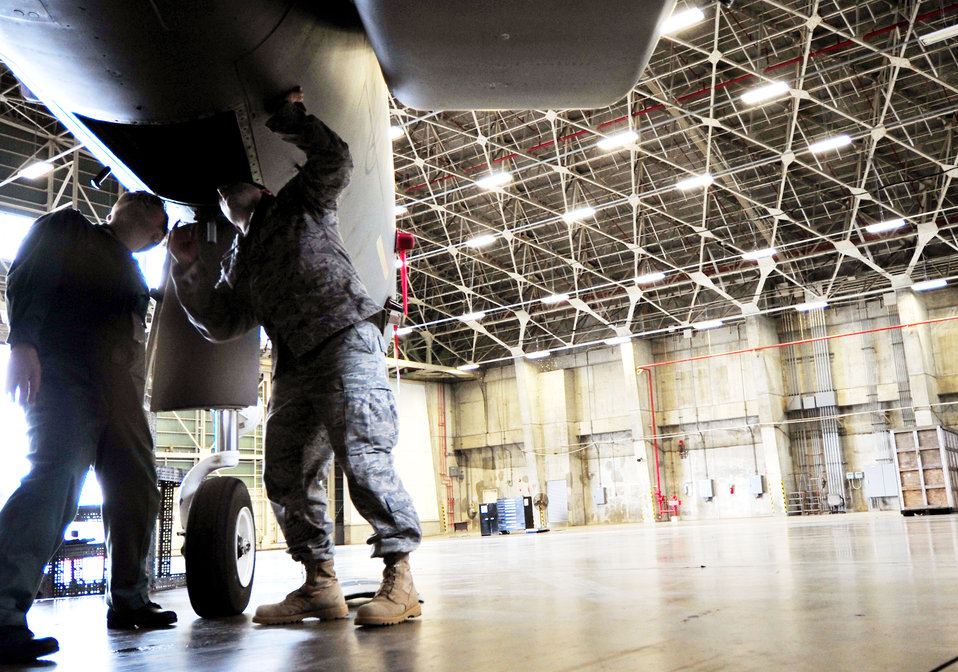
Bilateral training strengthens American, Japanese ties

Staff Sgt. Shaun Mullock and Takuya Nishibo look at the electronics of an F-15 Eagle Feb. 16, 2010, at Kadena Air Base, Japan. Sergeant Mullock is an electrical environmental systems specialist assigned to the 18th Aircraft Maintenance Squadron and Mr. Nishibo is a member of the Japan Air Self Defense Force.